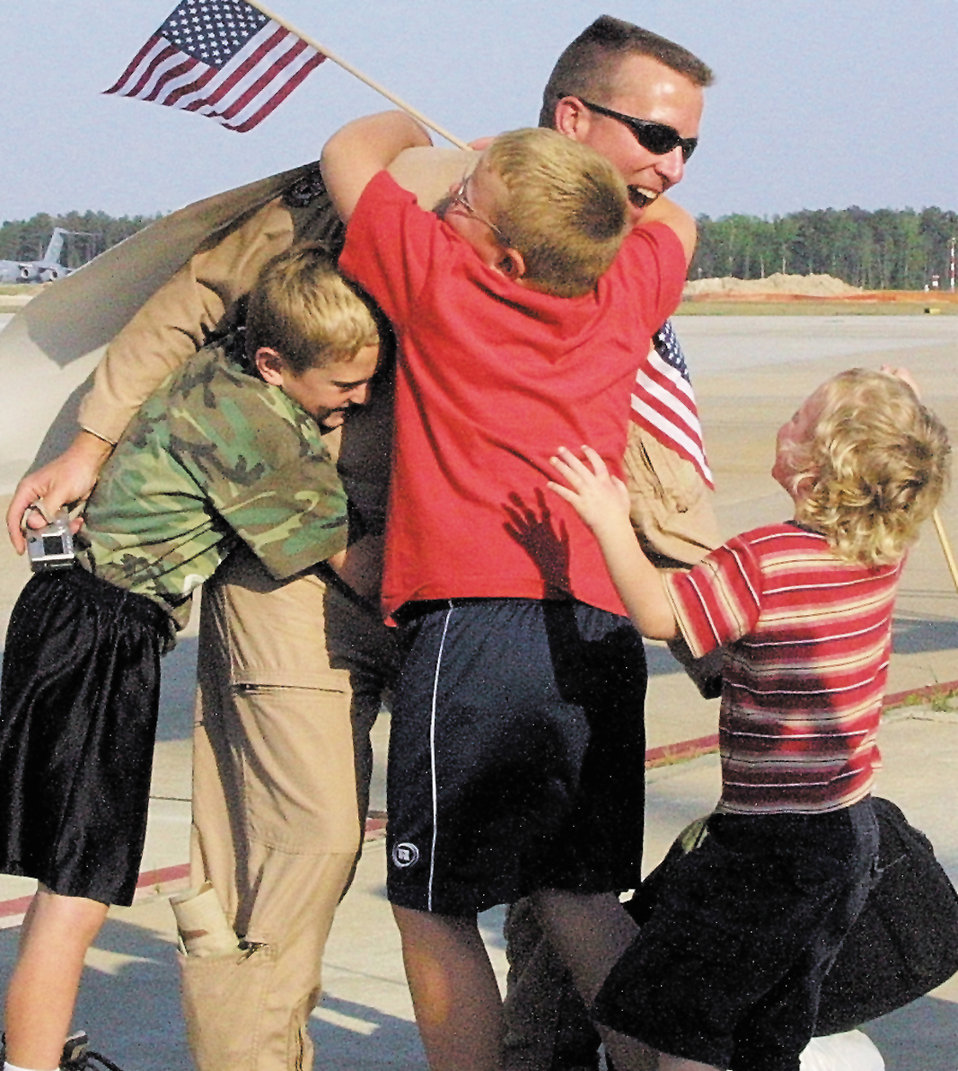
Happy homecoming

POPE AIR FORCE BASE, N.C. -- Maj. Scott Benson is trampled by his three sons after returning home April 19 from a three-month deployment in Southwest Asia. Major Benson is assigned to the 41st Airlift Squadron here.